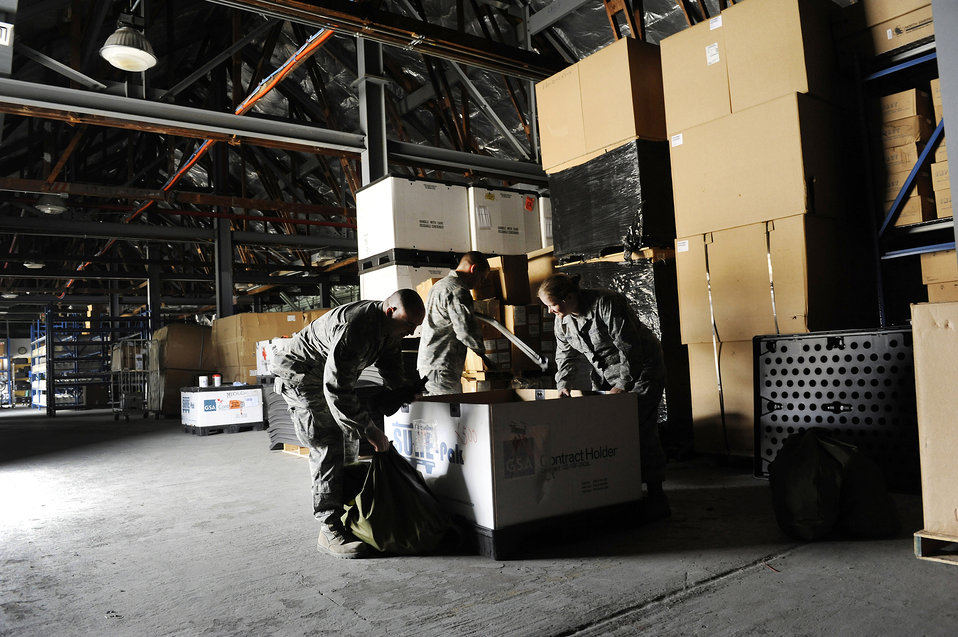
Medical

Staff Sgt. Erick Bartels, Staff Sgt. Caleb Gibson and Airman 1st Class Michele Grove inventory equipment inside a box at Joint Base Andrews, Md., Aug. 15, 2012. The Airmen are biomedical equipment technicians assigned to the Medical Logistics Flight of the 779th Medical Support Squadron.